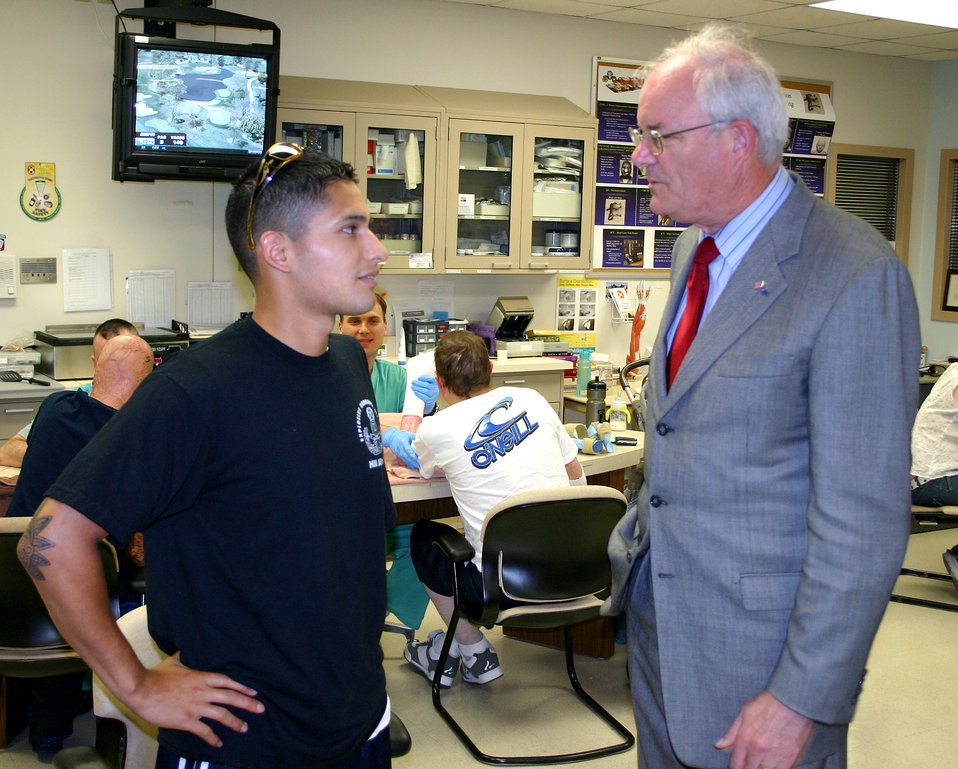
Secretary Wynne expects Airmen to continue to excel

Secretary of the Air Force Michael W. Wynne visits with Senior Airman Daniel Acosta at Brooke Army Medical Center in San Antonio on Thursday, June 1, 2006. Secretary Wynne was in San Antonio visiting various military installations and training sites. Airman Acosta is an explosive ordnance disposal specialist who lost his arm while assigned to the 447th Expeditionary Civil Engineer Squadron in Iraq. He stepped on a pressure plate, setting off an improvised explosive device in December 2005.